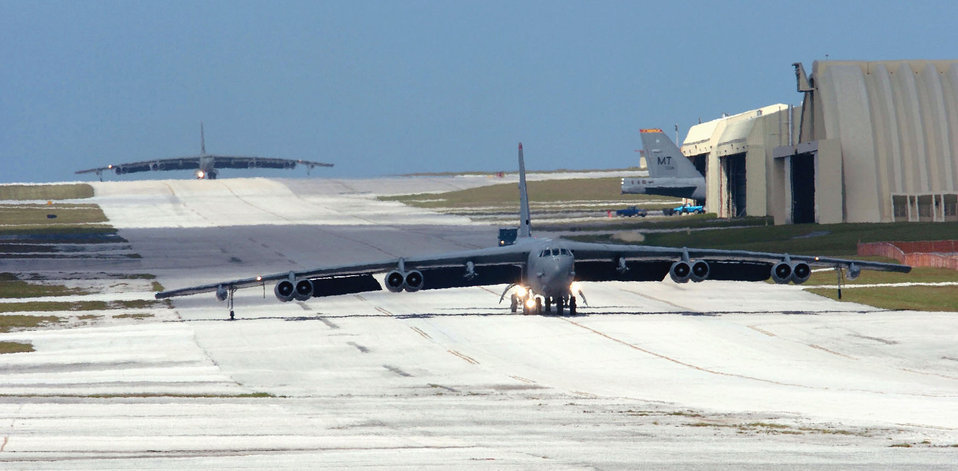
Minot B-52 ground crews deployed at Guam

ANDERSEN AIR FORCE BASE, Guam -- Two B-52 Stratofortress aircraft and crews from the 5th Bomb Wing at Minot Air Force Base, N.D., return here from a mission. The wing is the first rotation to deploy to Guam following the decision to station a bomber force here.